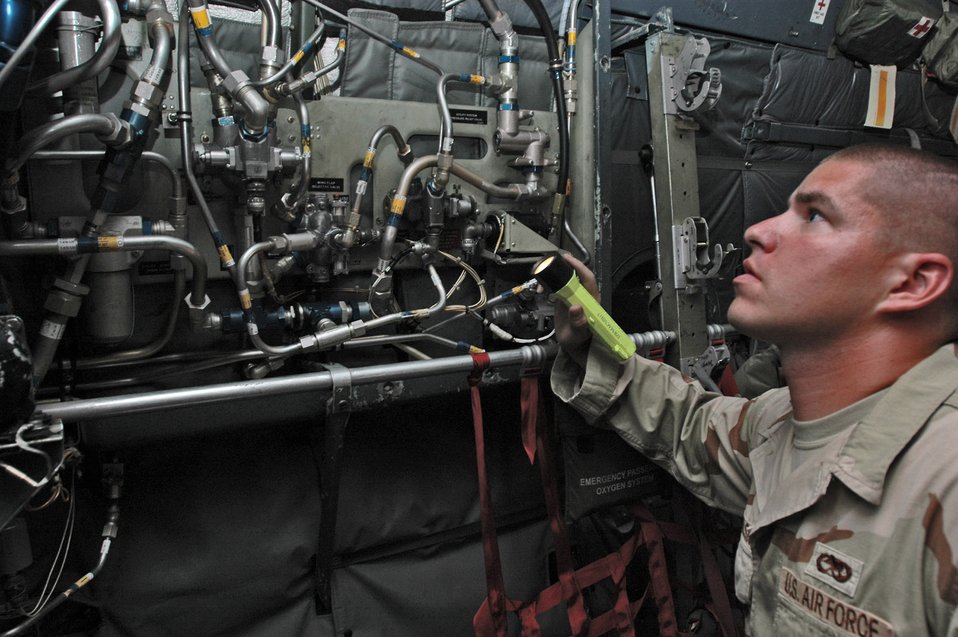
Life of the line

Senior Airman Joe Smigielski inspects hydraulics lines inside a C-130 Hercules at a base in Southwest Asia. Airman Smigielski is a C-130 flying crew chief assigned to the 379th Expeditionary Aircraft Maintenance Squadron's 746th Aircraft Maintenance Unit. He is deployed from Dyess Air Force Base, Texas.